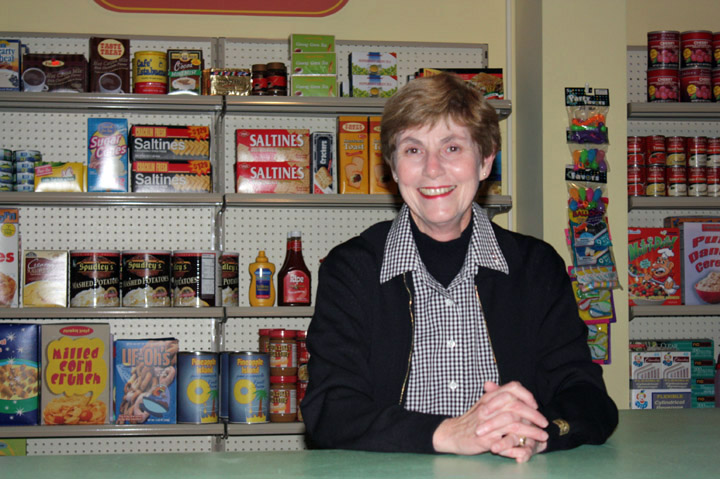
Sesame Street visit

Deborah Mullen, wife of Chairman of the Joint Chiefs of Staff Adm. Mike Mullen, takes a seat in Mr. Hooper?s store while visiting the Sesame Street studio in Queens, New York, Oct. 14, 2009. Mrs. Mullen was there to support the filming of a video aimed at helping military children and their families cope with the loss of a loved one.